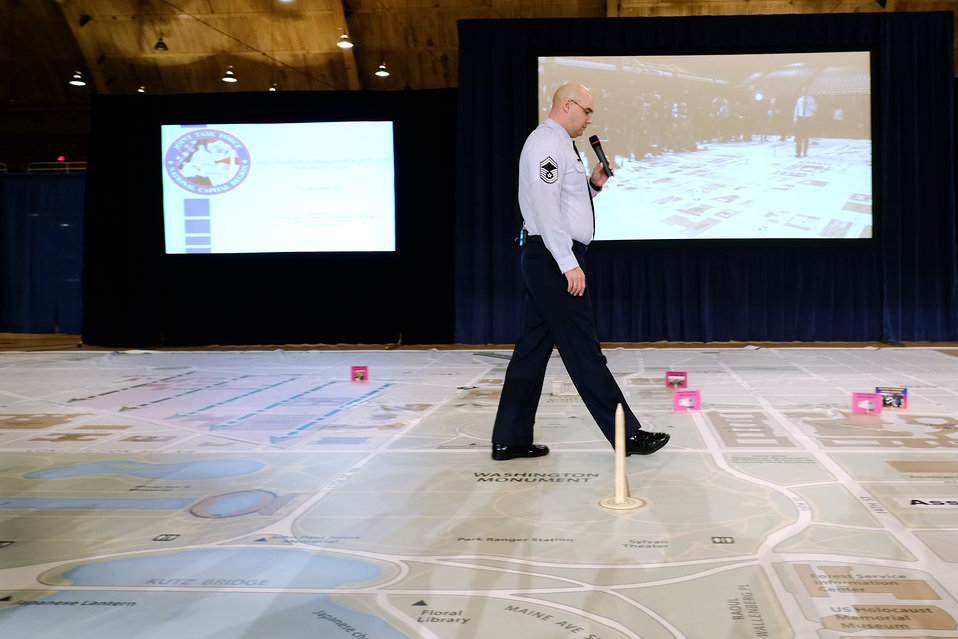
Presidential Inauguration

Senior Master Sgt. Scott Hinds, with the District of Columbia Air National Guard, walks along a large-scale map of Washington, D.C., while giving a briefing about aspects pertaining to the 57th Presidential Inauguration annotated on the map at the District of Columbia Armory, Wednesday, Dec. 12, 2012. The District of Columbia National Guard has participated in every presidential inauguration since 1861 and is one of the key agencies involved in planning for the upcoming inauguration.